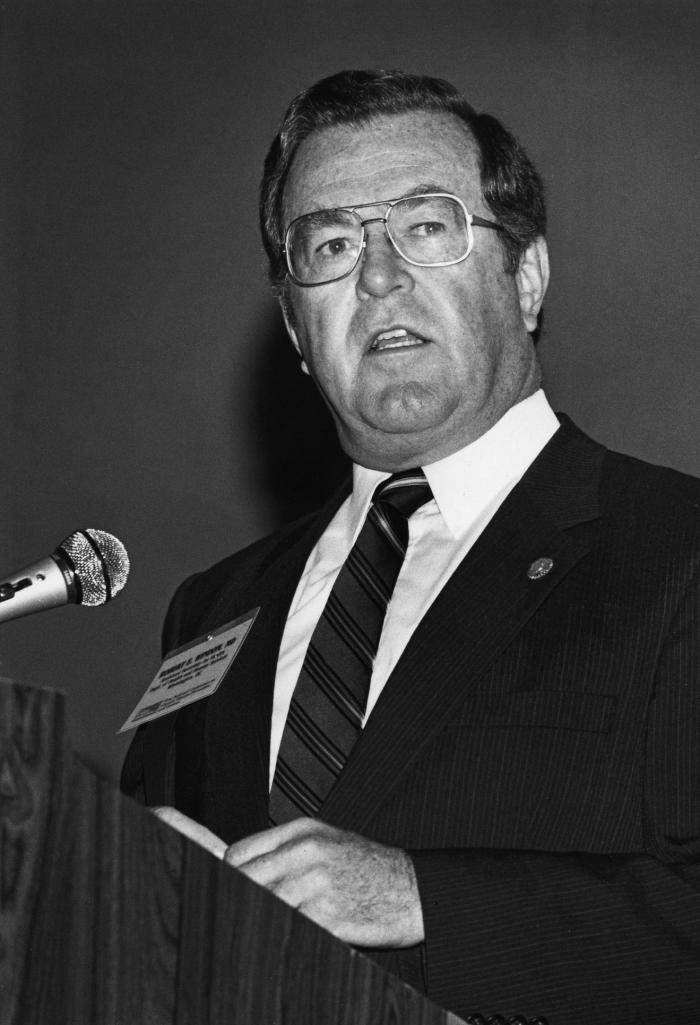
This 1986 photograph showed the former Assistant Secretary for Health, Robert E. Windom, M.D., speaking to Centers for Disease Control employees at the CDC's 40th anniversary ceremony.